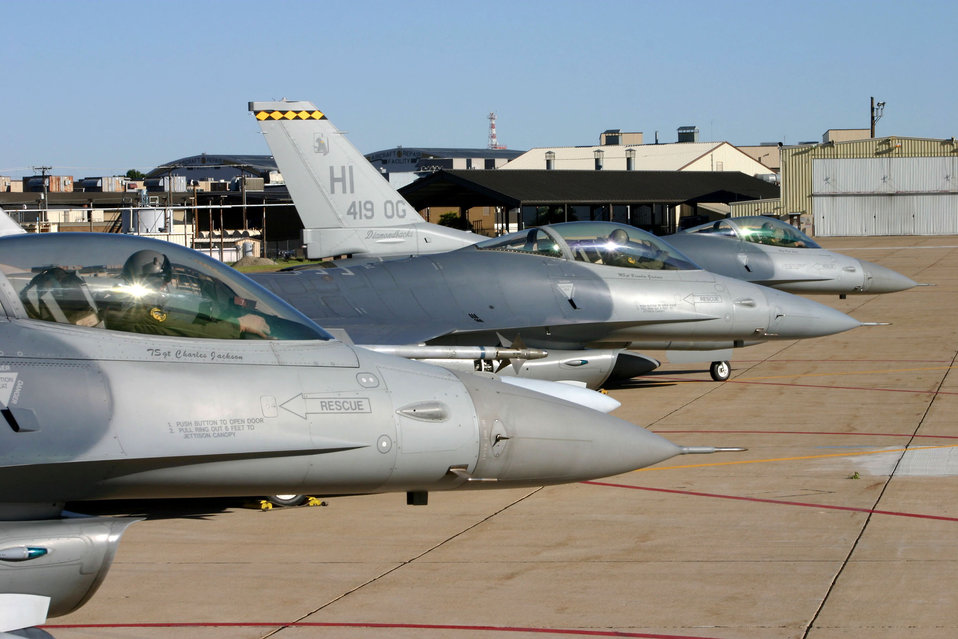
Hill reservists say goodbye to last of F-16s

The last three F-16 Fighting Falcons assigned to the 419th Fighter Wing prepare to taxi for departure June 28 from Hill Air Force Base, Utah. The wing's entire fleet of F-16s have been reassigned to other Reserve and Air National Guard bases.